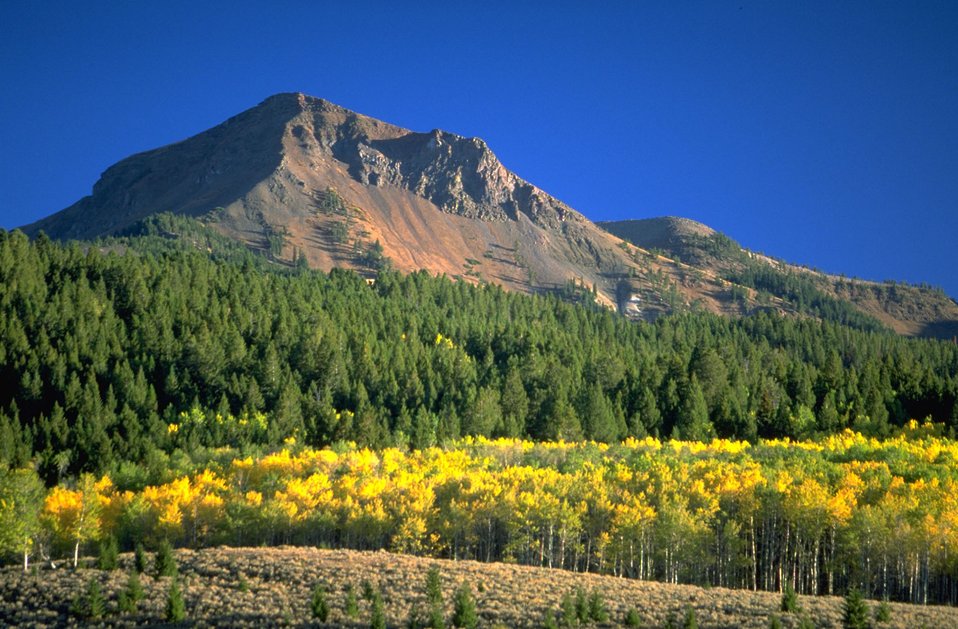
Baldy Mountain in the Centennial Range with forrested uplands and aspen grove in the foreground